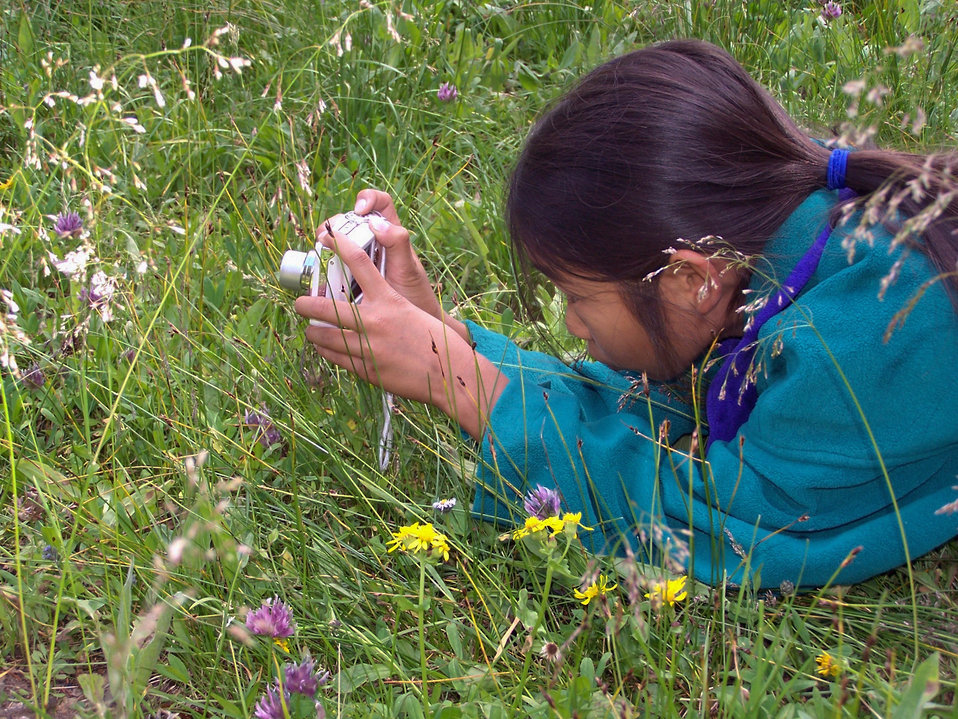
camera

Let children get close to nature. A little dirt can be washed away. The U.S. Forest Service’s Discover the Forest program aims to inspire tweens (aged 8-12) and their parents to re-connect with nature, experiencing it first-hand. The campaign brings to life the joy and excitement kids have when they discover the wonders of nature, helping create interest in their environment and a lifelong relationship with it.